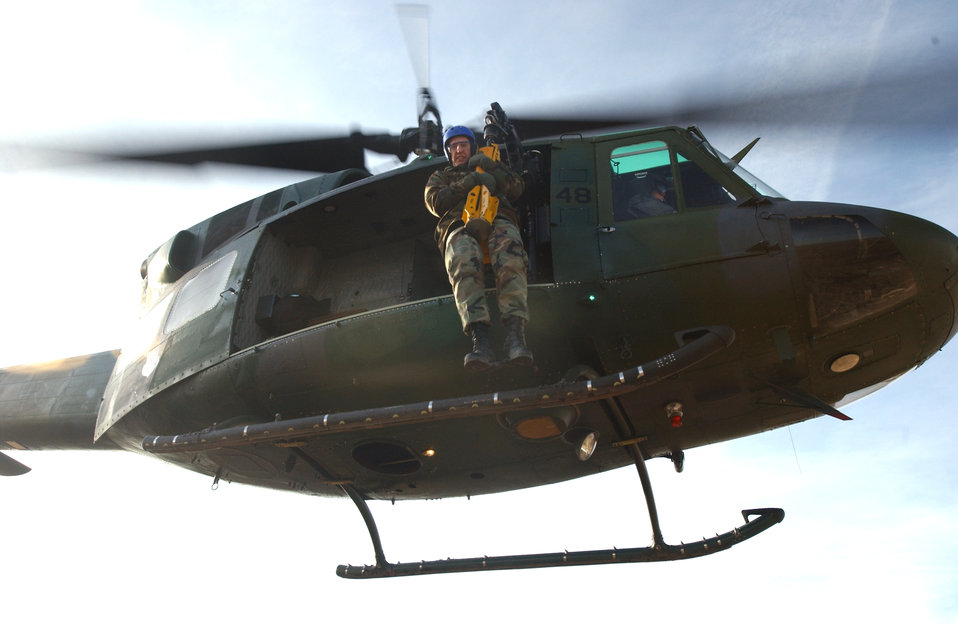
Learning to survive

FAIRCHILD AIR FORCE BASE, Wash. -- A Survival Evasion Resistance and Escape School student gets lifted by a forest penetrator hoist during training here recently. Flight crews assigned to the 36th Rescue Flight assist students attending the 17-day school by providing airlift for training and in the event of an accident.